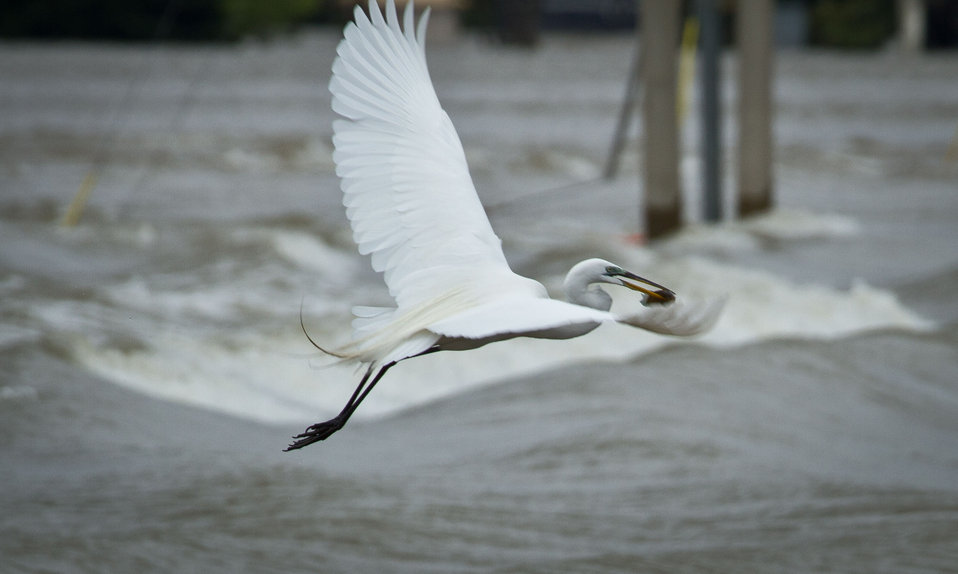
A bird picks up a fish from Mississippi River floods waters flowing over roadways and inundate casinos and the farms that surround them in Tunica, MS on Sunday, May 15. 2011.